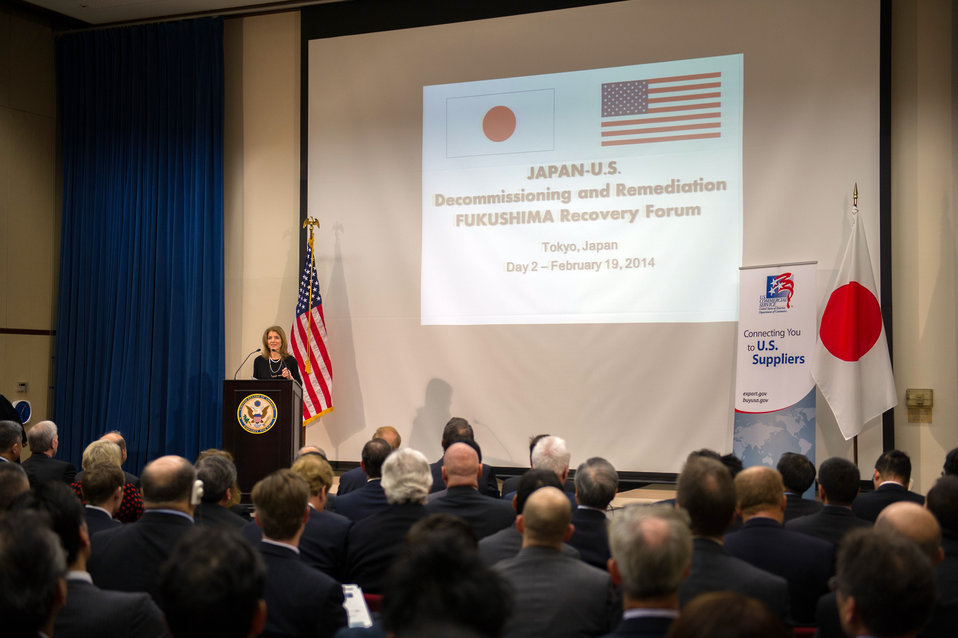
Ambassador Kennedy Delivers Remarks at Fukushima Recovery Forum

U.S. Ambassador to Japan Caroline Kennedy delivers opening remarks at the Japan-U.S. Decommissioning and Remediation Fukushima Recovery Forum at the U.S. Embassy Tokyo in Tokyo, Japan, on February 19, 2014.